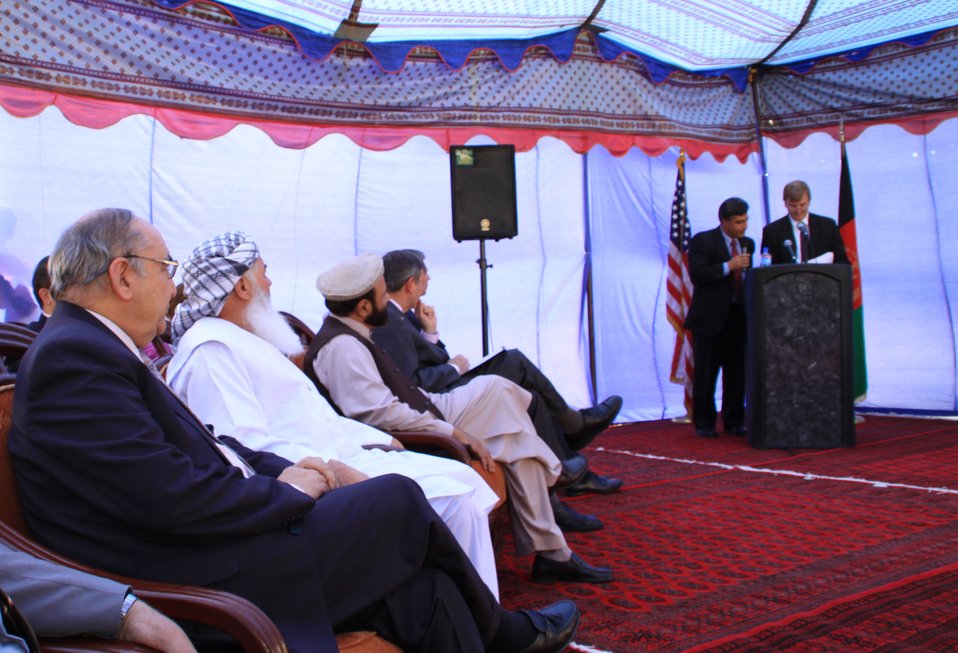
105 MW Tarakhil Power Plant Handover